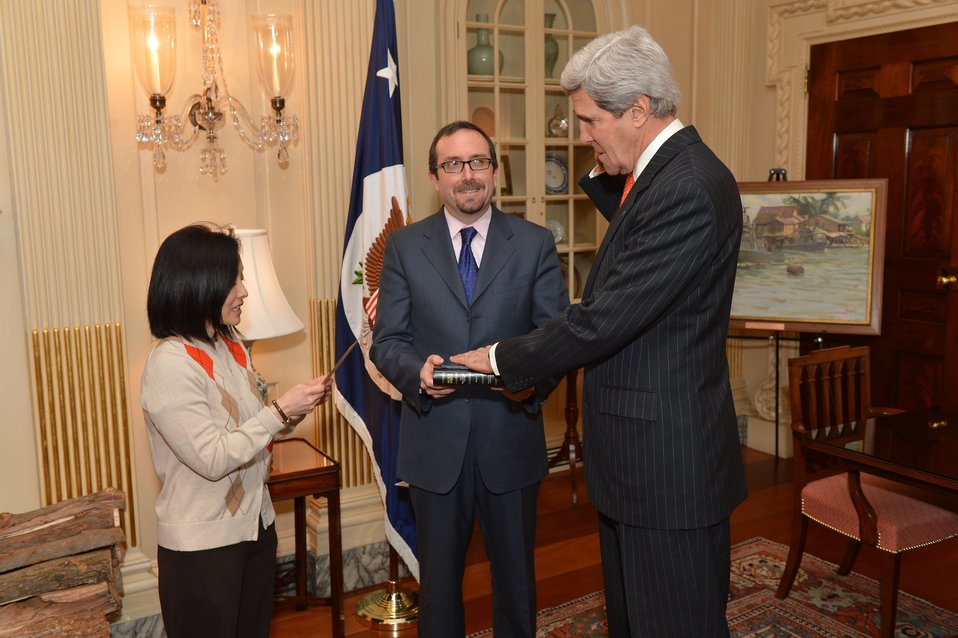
Secretary Kerry Takes Oath to Become a Member of the Advisory Council to the Board of Governors of the American National Red Cross

U.S. Secretary of State John Kerry takes the oath to become a member of the Advisory Council to the Board of Governors of the American National Red Cross, at the U.S. Department of State in Washington, D.C., on February 3, 2014.